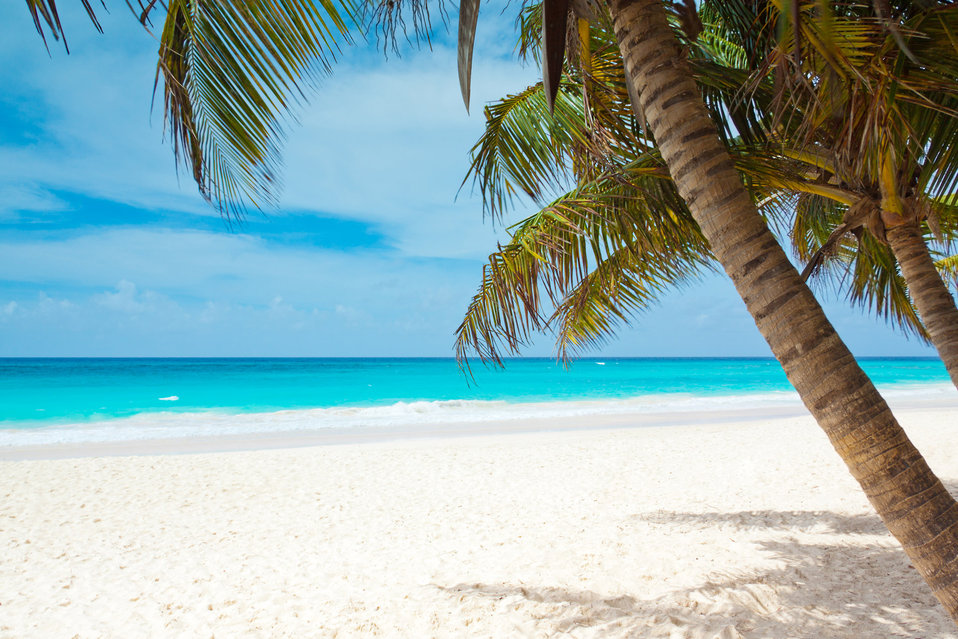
Tropical paradise beach with blue water and a palm tree.